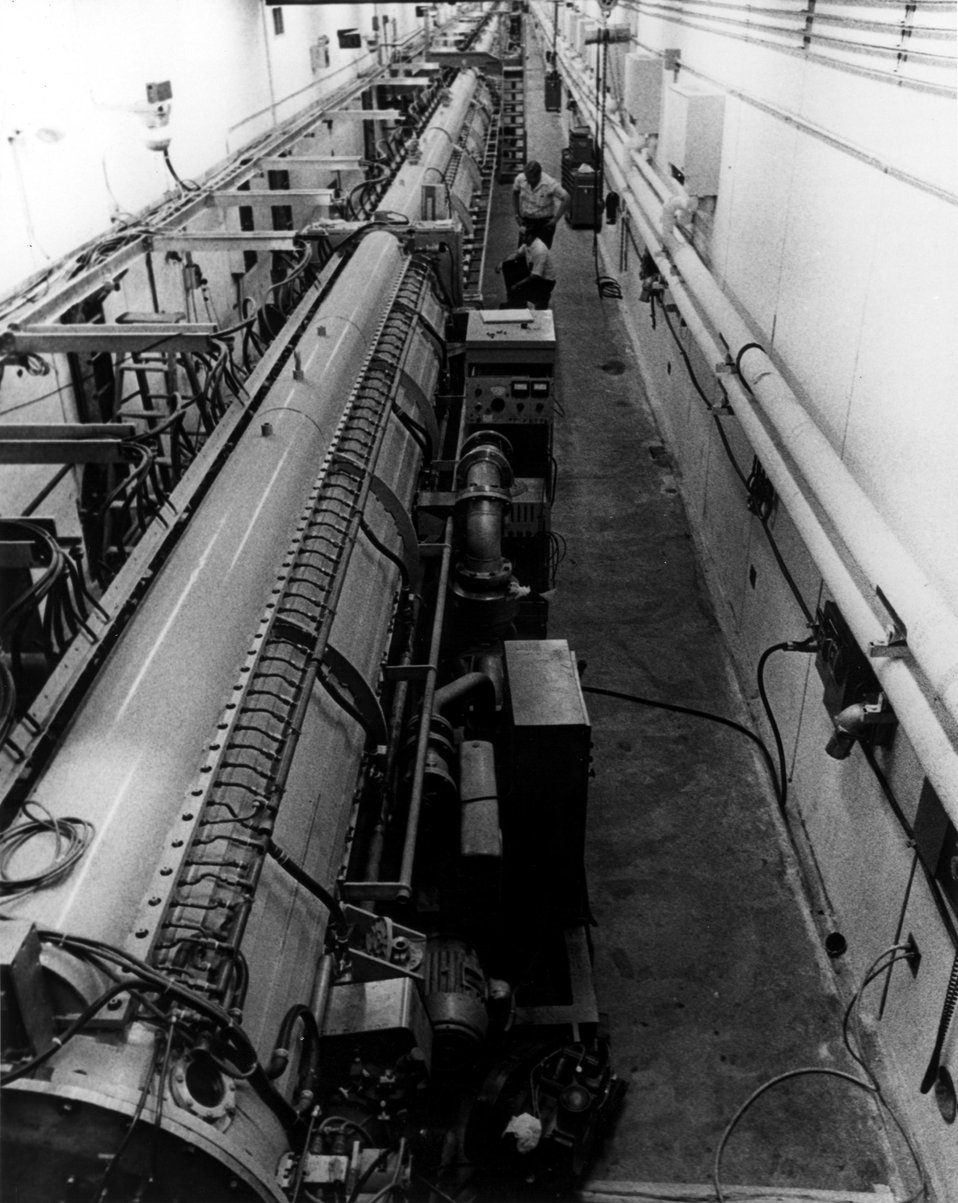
The Linear Accelerator at the National Accelerator Laboratory. c. 1976